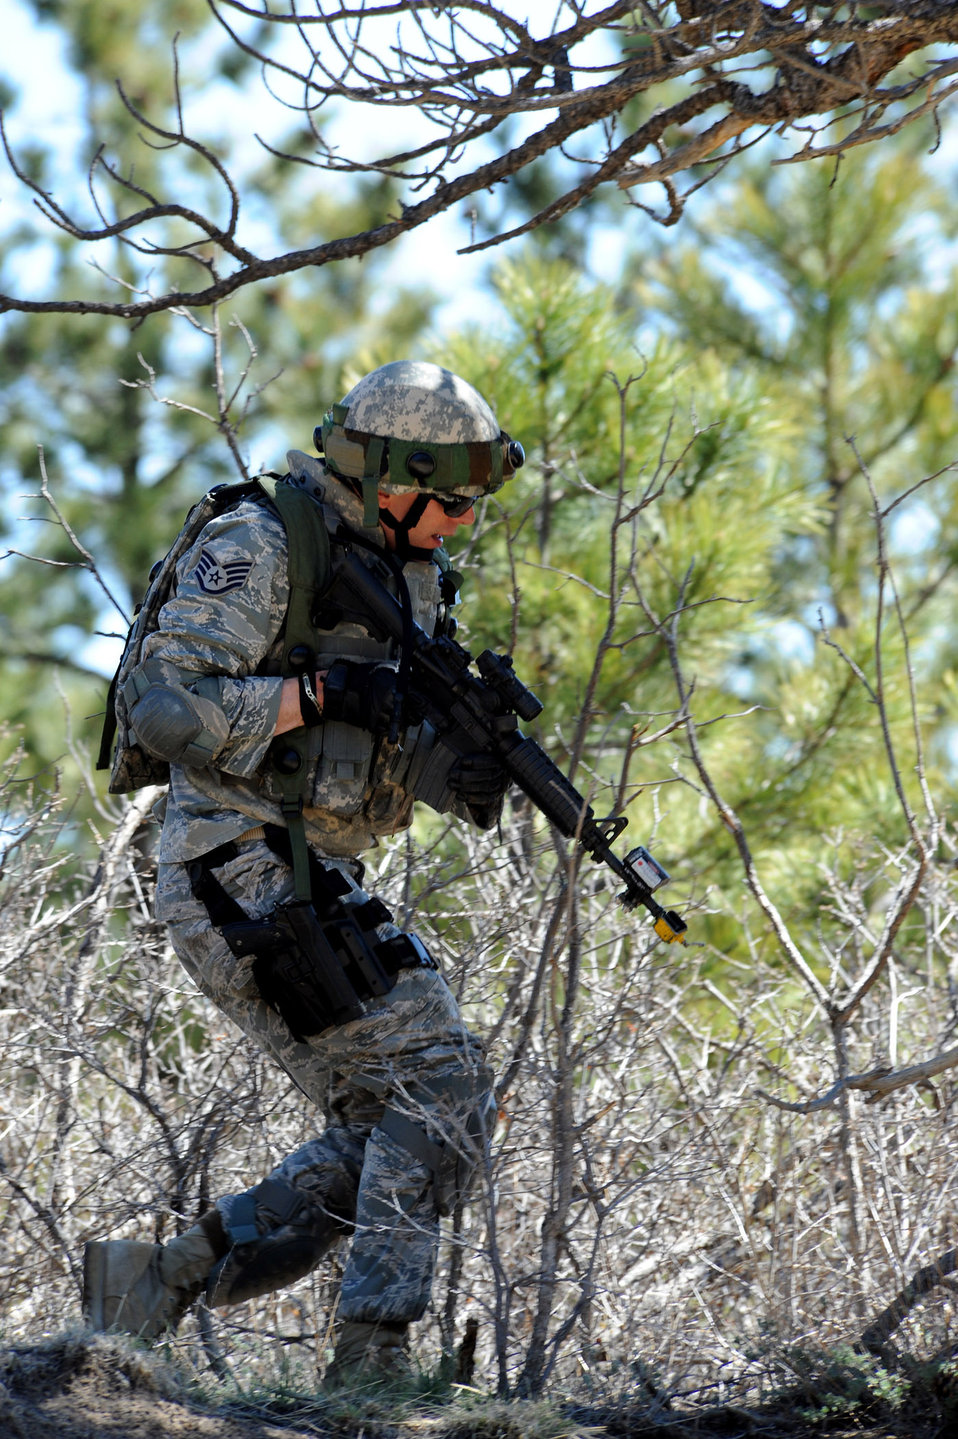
Taking cover

Staff Sgt. Alex Andriyanov heads for cover during the tactics competition at Guardian Challenge May 16, 2010, at the U.S. Air Force Academy in Colorado. Sergeant Andriyanov is assigned to the 61st Security Forces Squadron at the Space and Missile Systems Center in Los Angeles.